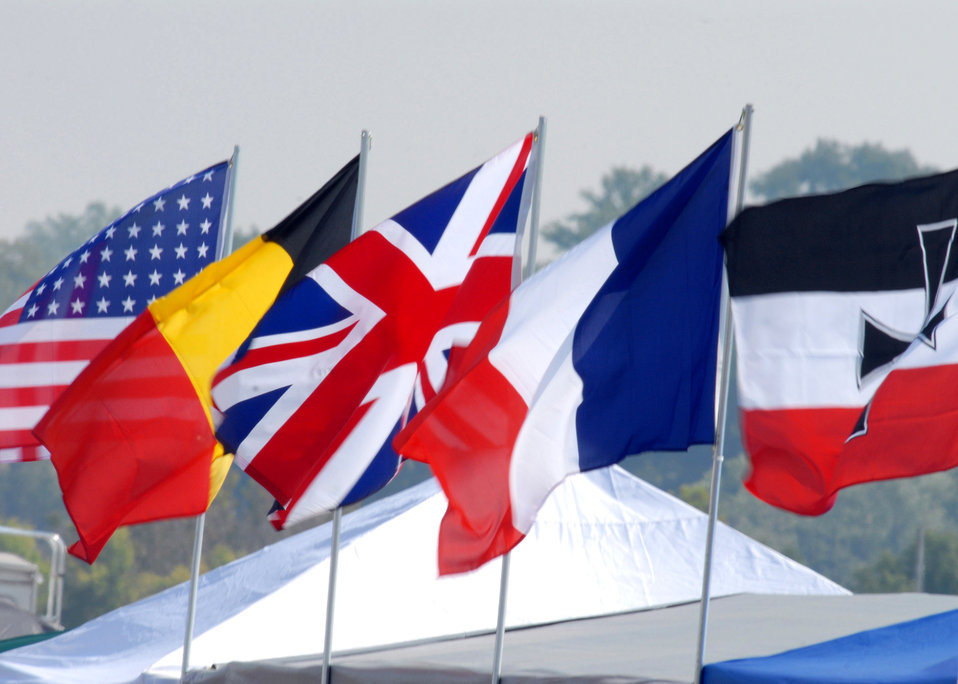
World War 1 Fly In

Flags from multiple nationalities are displayed at the Dawn Patrol Rendezvous World War I Fly-In on the grounds of the National Museum of the United States Air Force here on 22 Sept. Activities included period re-enactors in a war encampment setting, era automobiles on display and participating in a parade, flying exhibitions by WWI radio-controlled aircraft, and a collector's show for WWI items.